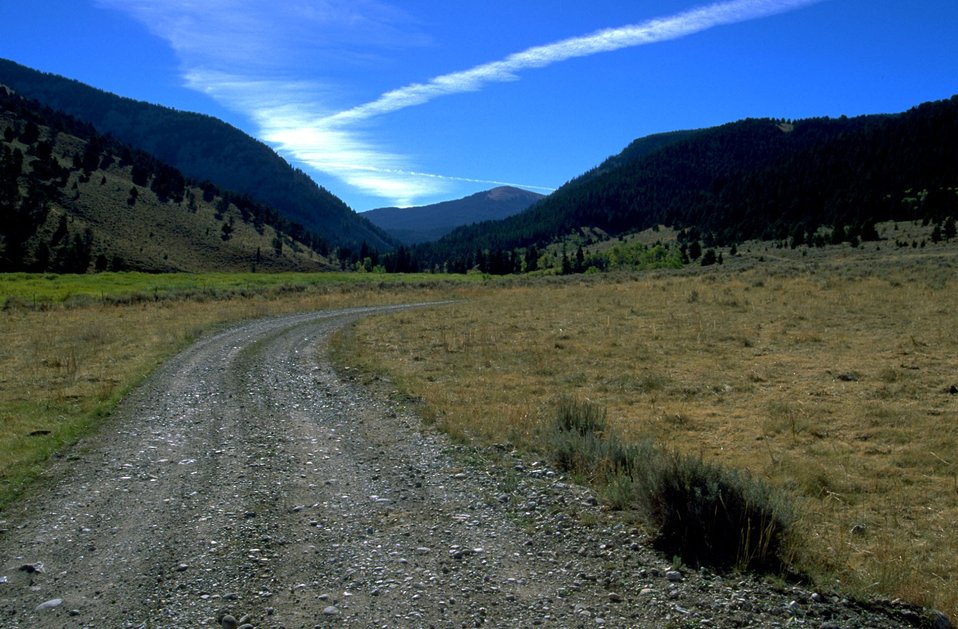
Road leading up the valley to the campground